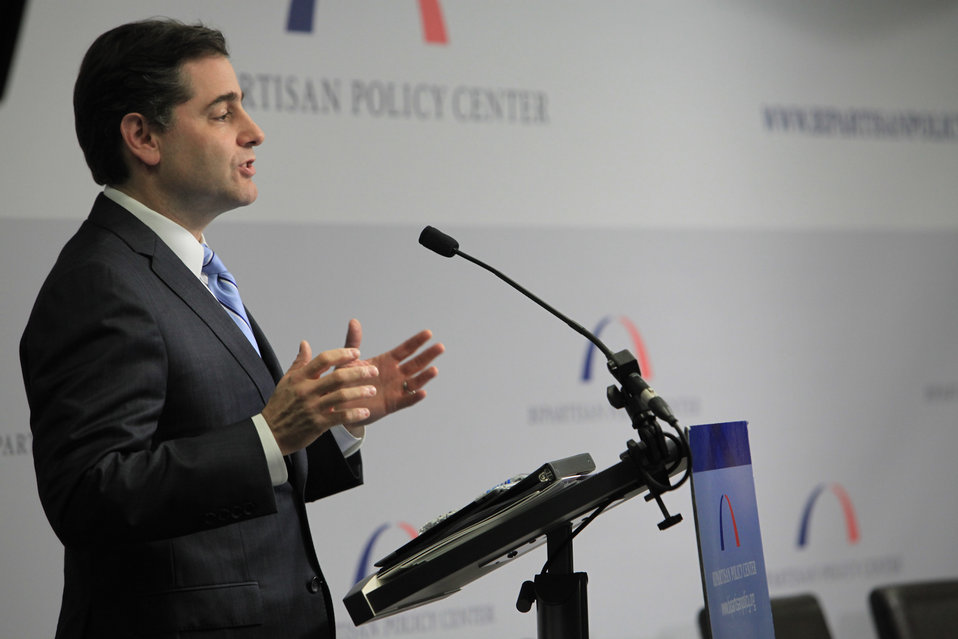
FCC Chairman Genachowski speaks about Cybersecurity at the Bipartisan Policy Center in Washington, DC, on February 22, 2012.